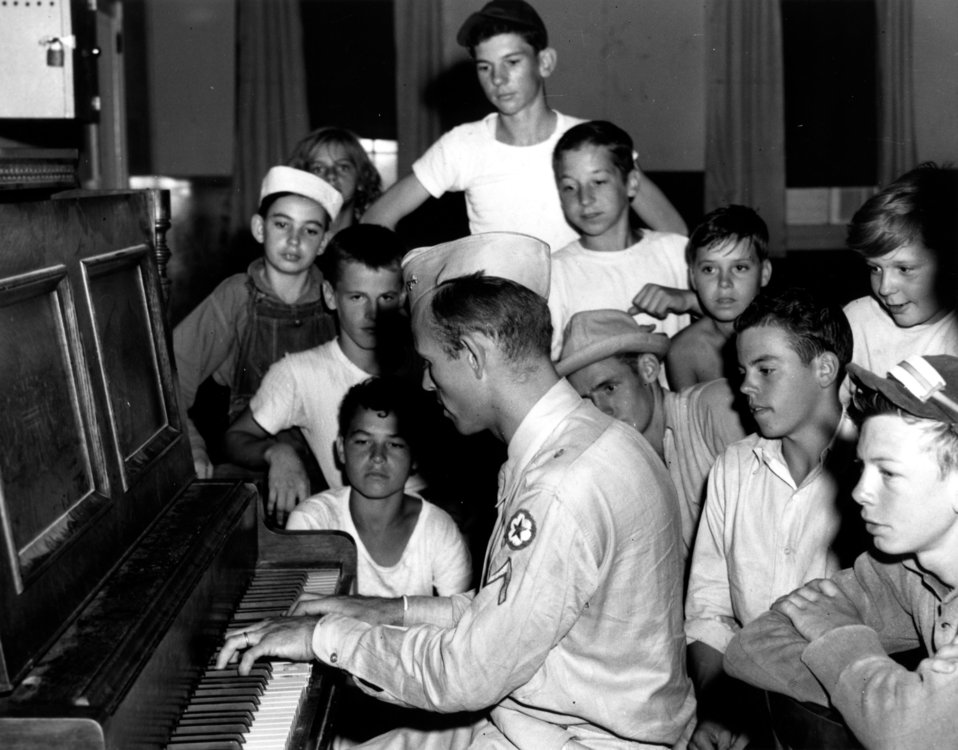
Army Activity at Oak Ridge